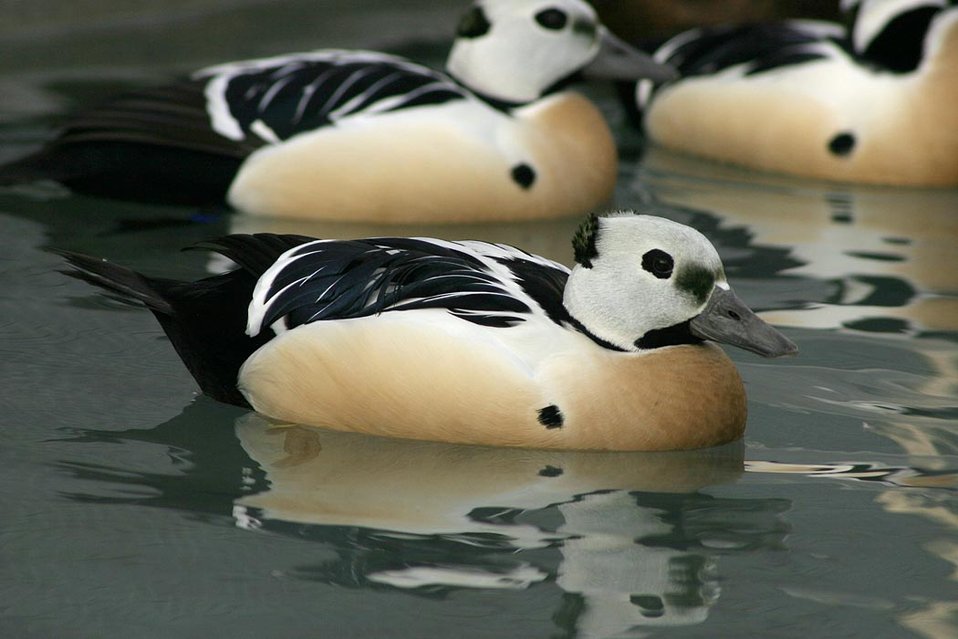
Threatened Steller's eider (Polysticta stelleri) males, Alaska SeaLife Center, Seward, Alaska